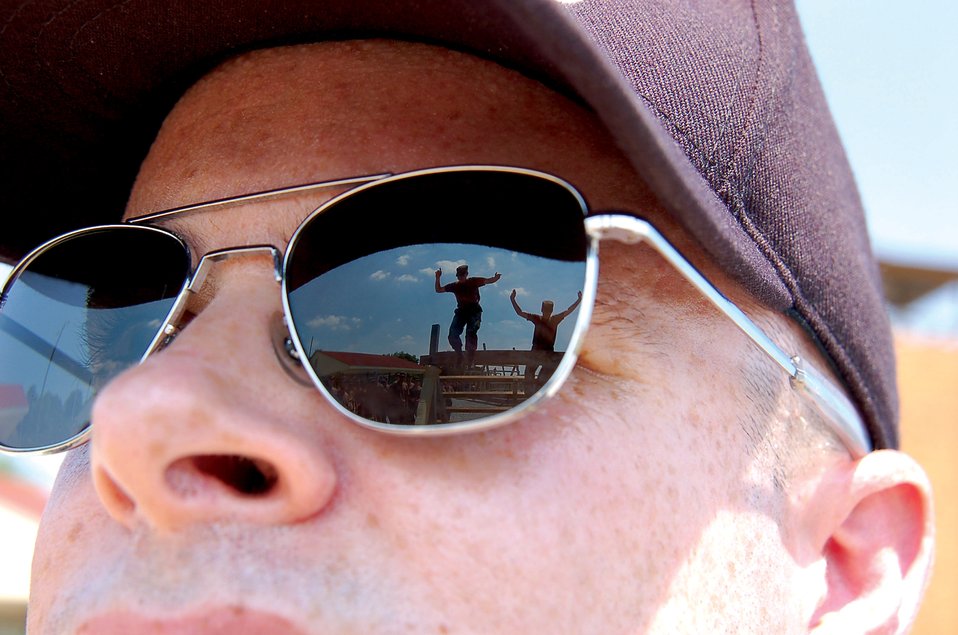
Air Force's OTS, ROTC staff preps for summer training surge

Capt. Brian Herman, an ROTC instructor from the University of Hawaii, watches as cadets make their way over a balancing obstacle during summer field training at Maxwell Air Force Base, Ala., in 2006. This year ROTC cadre staff expect to train more than 1,250 cadets during summer field training at Maxwell. An additional 1,250 cadets will be trained at Ellsworth Air Force Base, S.D.